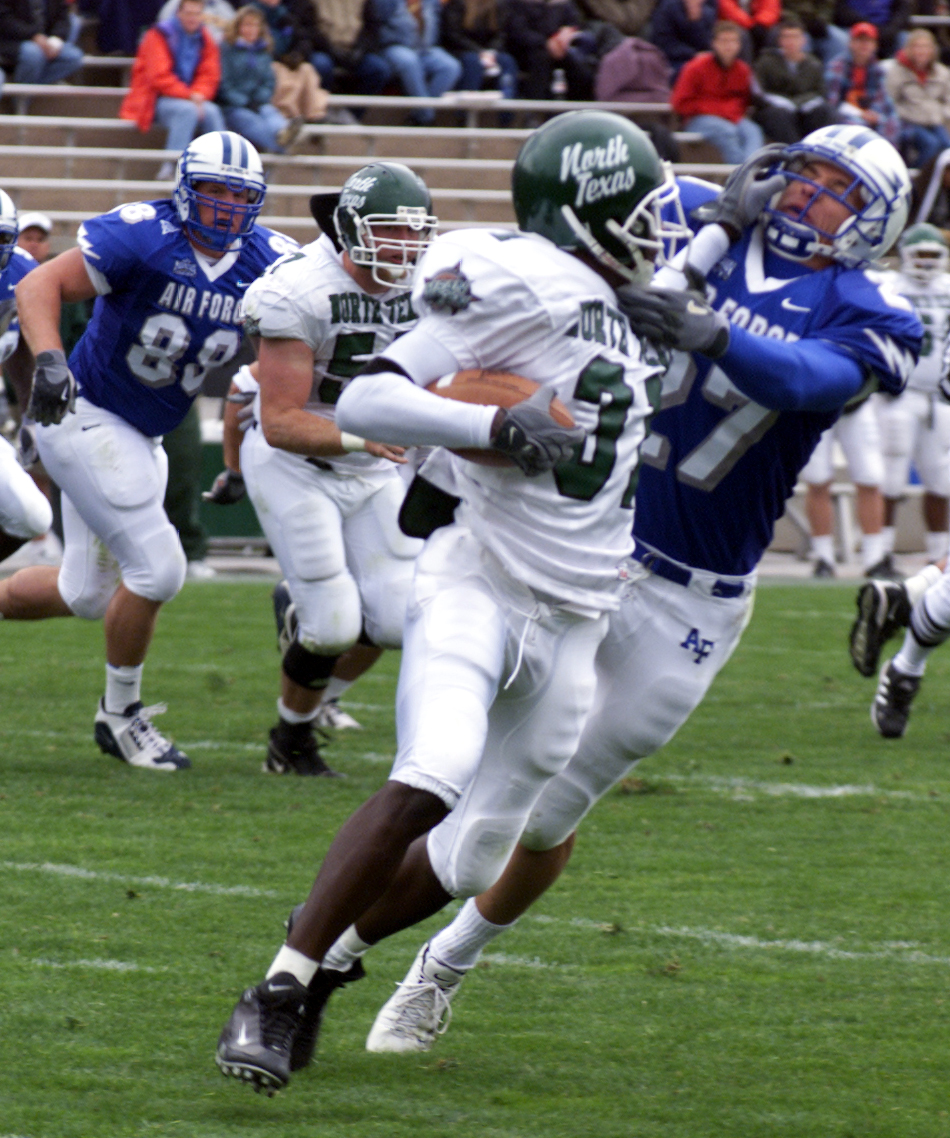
Falcon game

U.S. AIR FORCE ACADEMY, Colo. -- Air Force back Dennis Poland fights off a stiff-arm from University of North Texas wide receiver Joel Nwigwe, as he drags the receiver down for a loss. Their 3-3-5 defensive alignment held North Texas to 45 yards rushing and 260 total yards in the Air Force's 34-21 victory on Sept. 13. The Falcons meet the University of Wyoming Cowboys on Sept. 20 at Falcon Stadium.